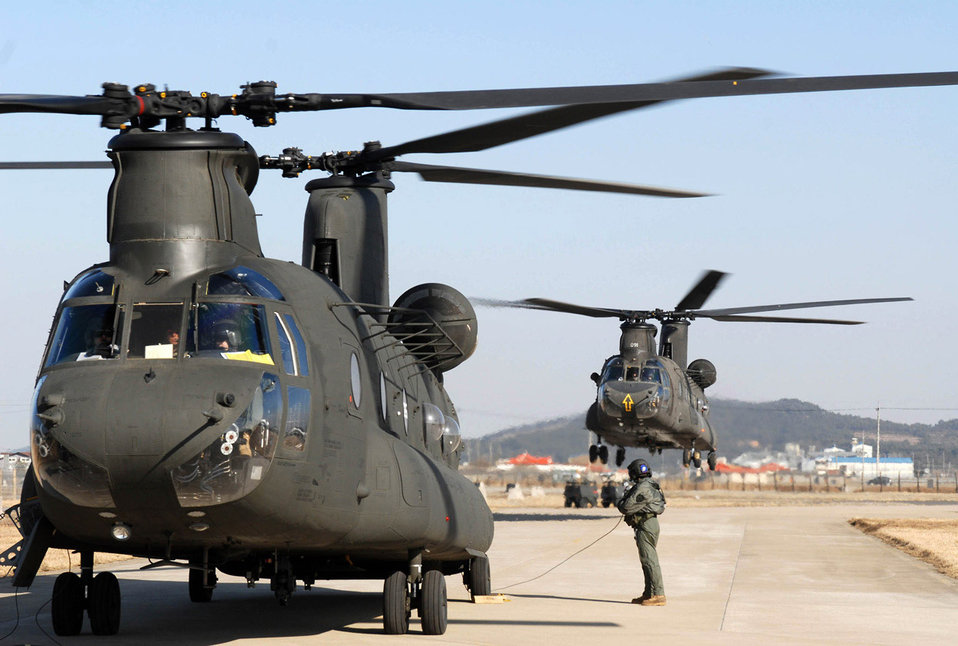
Korea Air Component Comand commander holds 6 ACCES

Two CH-47 Chinook helicopter's land March 1at Kunsan Air Base, South Korea. The Chinook's arrived from Camp Humphrey's, Bravo Company 4-2, as part of the Key Resolve/Foal Eagle Exercise, enhancing combat readiness and joint interoperability.